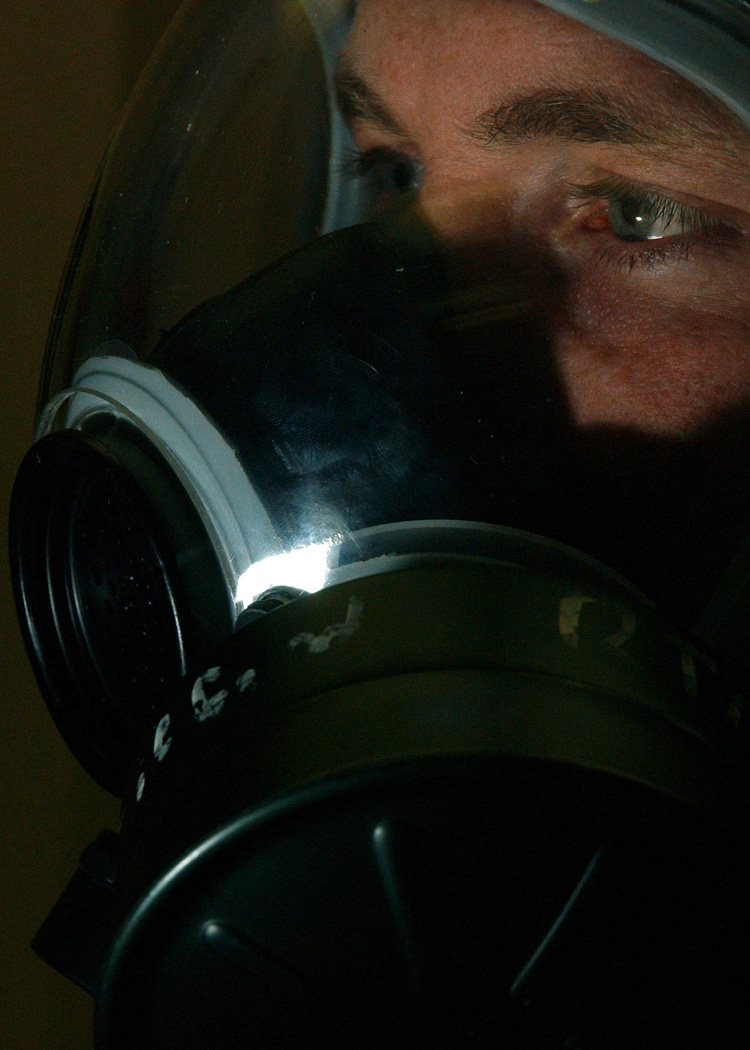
Getting fit

EIELSON AIR FORCE BASE, Alaska -- First Lt. Michael McGrew breathes into his gas mask during a fit test here to ensure his mask has a proper seal to prevent leaks. Lieutenant McGrew is assigned to the 18th Fighter Squadron.